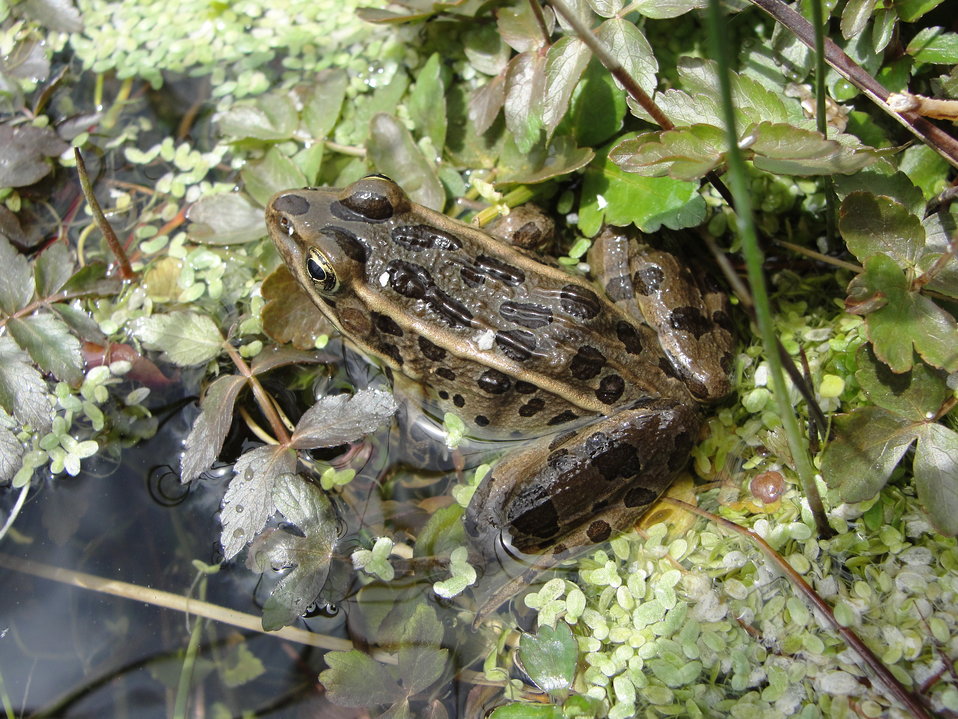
Northern leopard frog (Rana pipiens ) occurring in Spring Valley, Nevada. Date of photo 5-18-2010.